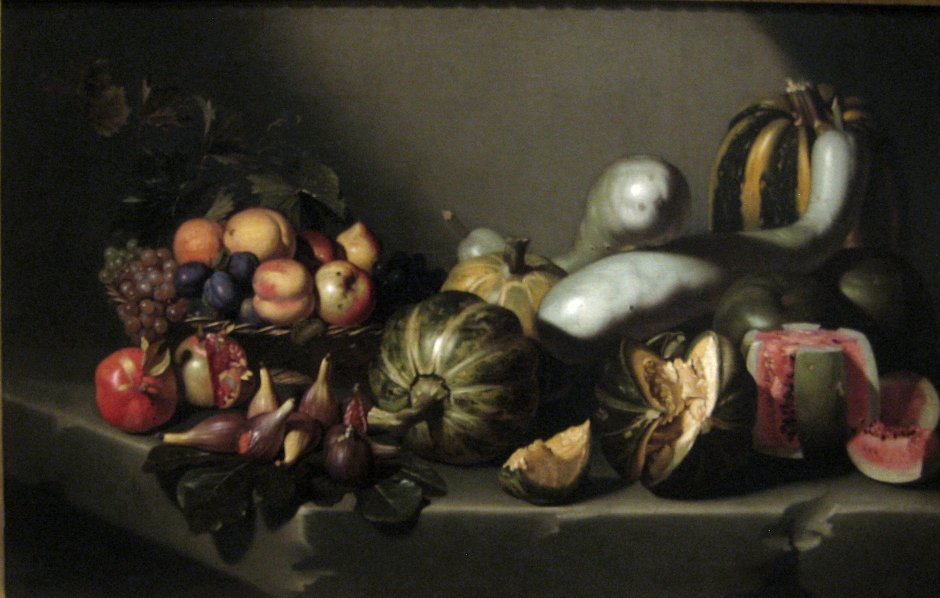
'Still Life with Fruit on a Stone Ledge', attributed to Michelangelo Merisi da Caravaggio